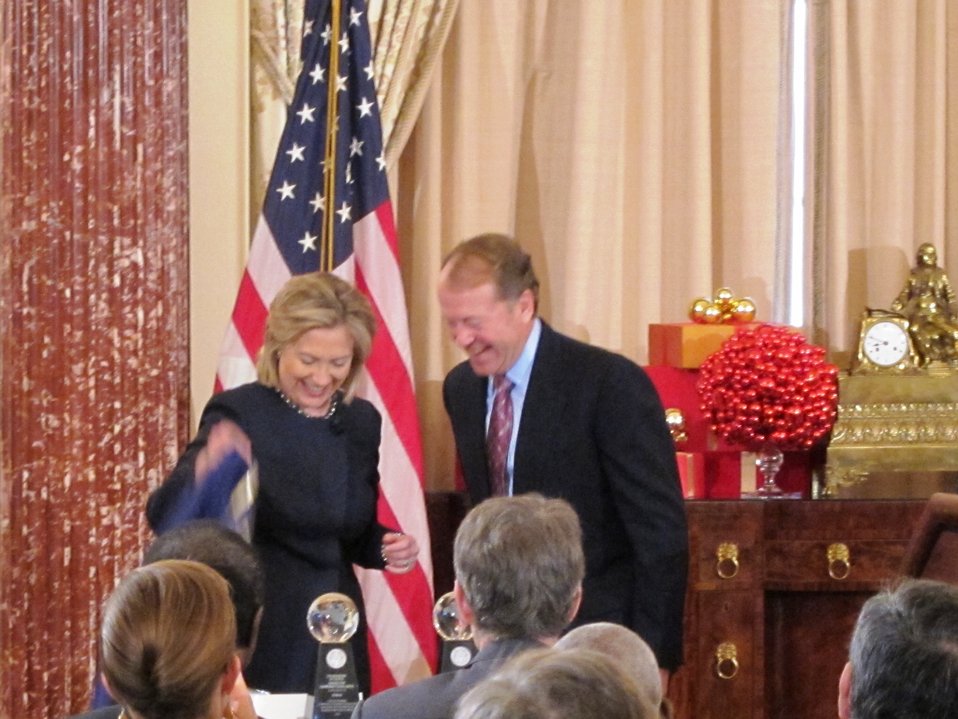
Secretary Clinton Speaks With Cisco CEO John Chambers

U.S. Secretary of State Hillary Rodham Clinton speaks with CISCO Chief Executive Officer John Chambers at the Secretary's Award for Corporate Excellence (ACE) ceremony at the U.S. Department of State in Washington, D.C., on December 17, 2010.